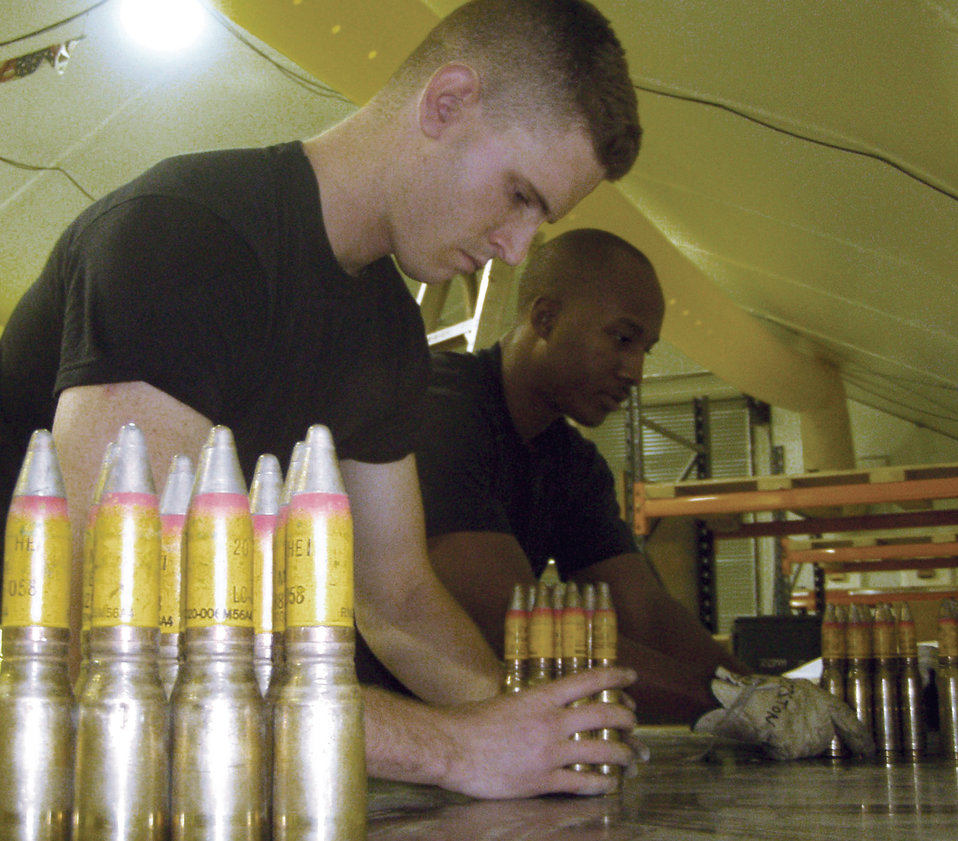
Ammo Airmen help put steel on target

SOUTHWEST ASIA -- Senior Airmen Matthew Hamilton and Damon Hairston inventory munitions at a deployed location. Ammo troops assemble, maintain and store munitions used by combat aircraft. Airman Hamilton is deployed from the 115th Fighter Wing, Truax Field, Wis., and Airman Hairston is from the 4th Fighter Wing at Seymour Johnson Air Force Base, N.C.